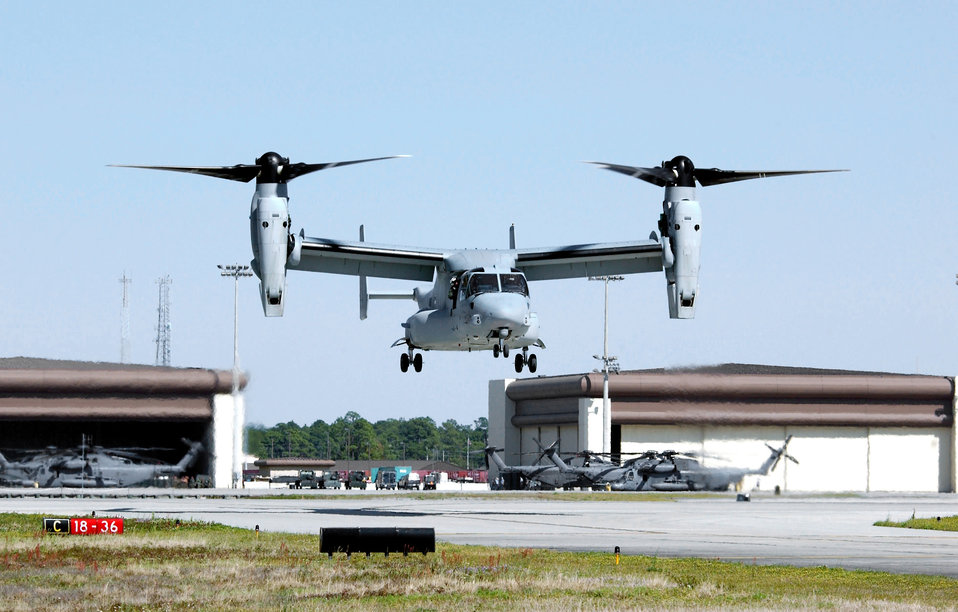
Just passing through

HURLBURT FIELD, Fla. -- A Marine Corps MV-22 Osprey lands here April 2 on its way to an air show at Eglin Air Force Base, Fla. Air Force Special Operations Command is expected to get 50 CV-22s, an Air Force-modified version of the MV-22, starting November 2006. Designed to conduct long-range missions, the tilt-rotor aircraft offers increased speed and range over other rotary-wing aircraft. Two CV-22s are currently at Edwards AFB, Calif., undergoing operational testing.